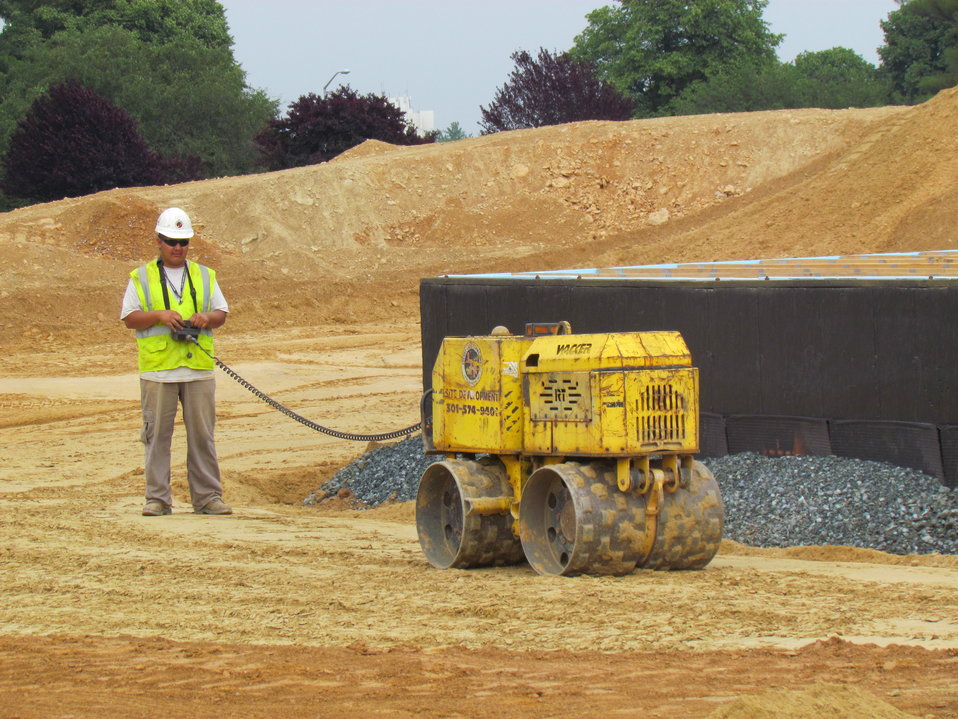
Net-Zero Energy Residential Test Facility - Photo of remote control device being used to pack backfill around basement walls.